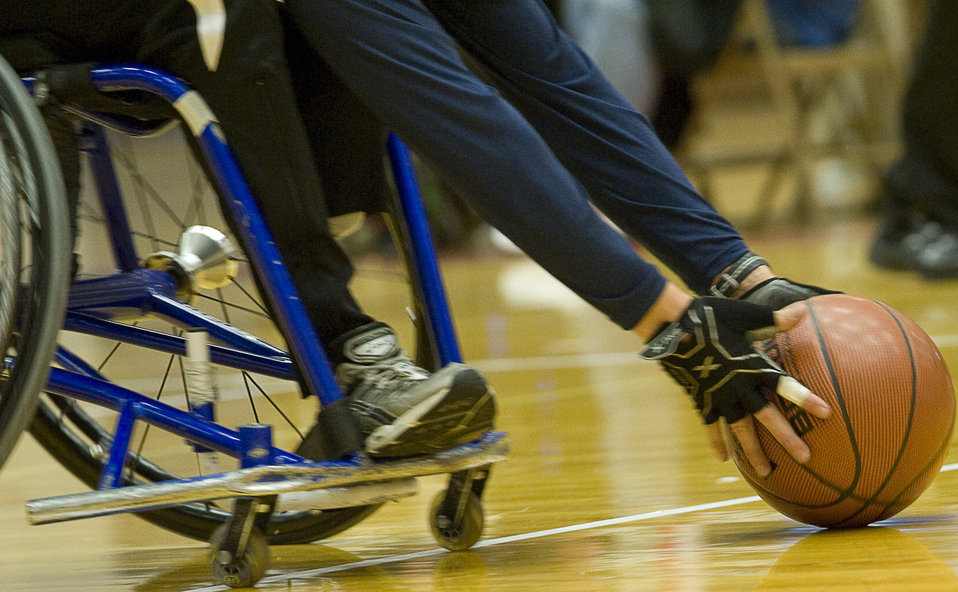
AF Basketball

A Navy basketball player races down the court after the basketball during the bronze medal game against the Air Force May 12, 2010 at the Olympic Training Center, Colorado Springs. The Air Force went on to win the game 13-10. The Warrior Games competition began May 10 and finishes on May 14, 2010 at the U.S. Olympic Training Center in Colorado Springs.